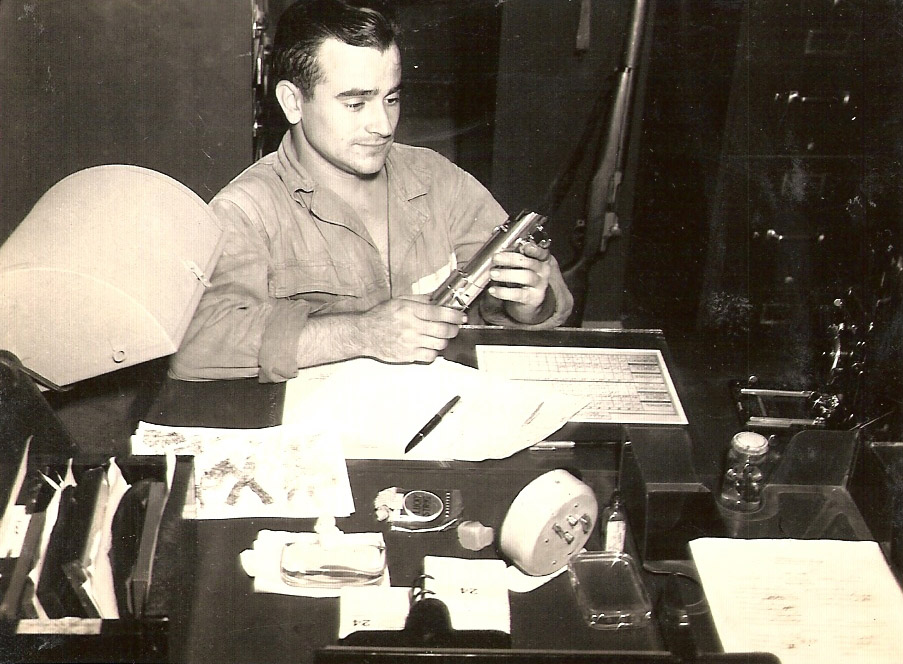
Cold War veteran receives Distinguished Flying Cross

Tech. Sgt. Roscoe Lindsay was one of 12 crew members who flew a classified reconnaissance mission over the Soviet Union during the early days of the Cold War. He was awarded the DFC posthumously 54 years after he flew a classified reconnaissance mission over the Soviet Union in 1952.